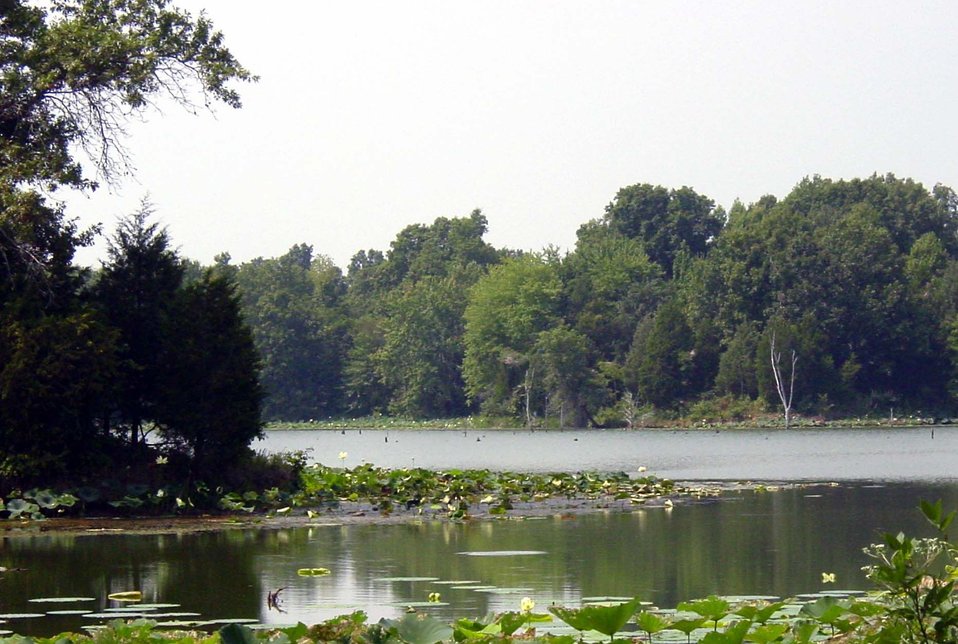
IL Crab Orchard National Wildlife Refuge wetlands